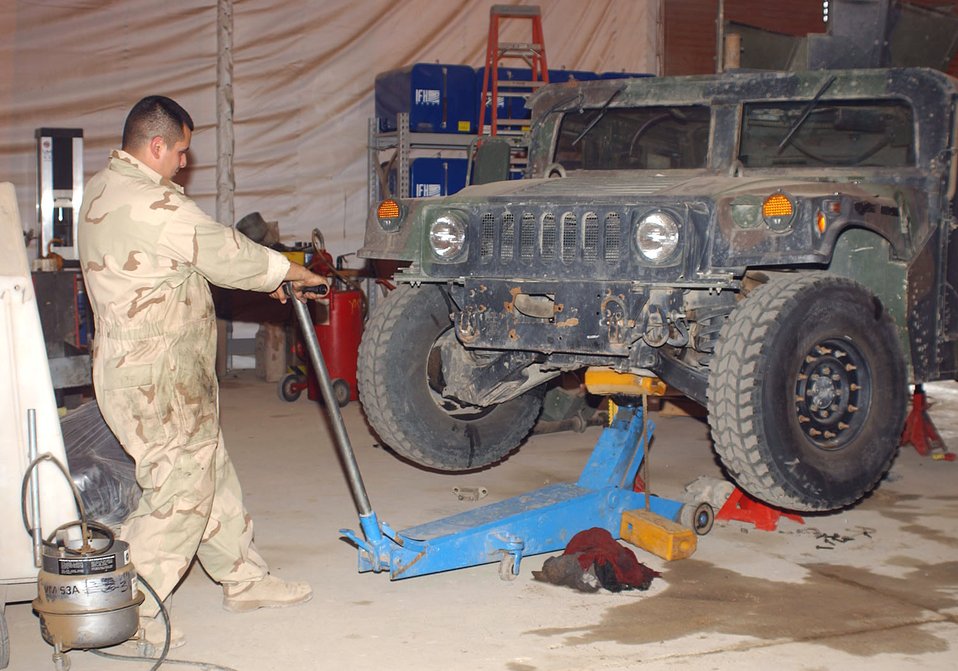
I know Jack

TALLIL AIR BASE, Iraq -- Senior Airman Juan Loya jacks up a Humvee that has a bad alternator and cooling system. Vehicles take a beating in the desert, so maintainers here find creative ways to return them to customers quickly. Airman Loya is a vehicle and equipment maintainer with the 407th Expeditionary Logistics Readiness Squadron.